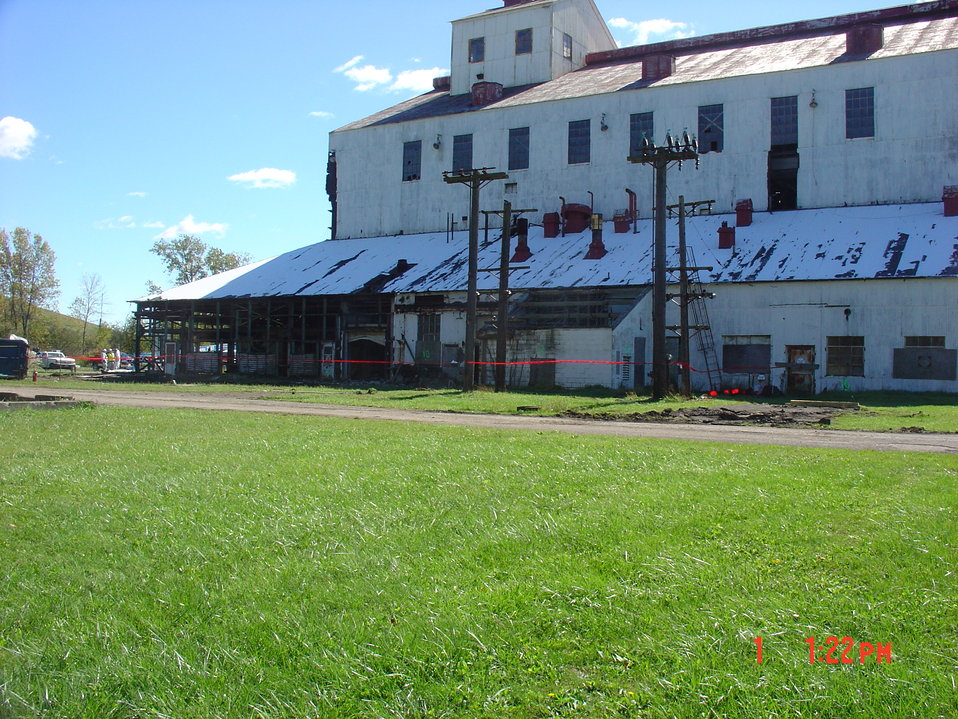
Building 401 siding removed.
Activities from the Niagara Falls Storage Site, which is associated with the former Lake Ontario Ordnance Works. Formerly Utilized Sites Remedial Action Program (FUSRAP), a program initiated in 1974 to identify, investigate and clean up or control sites that were part of the Nation's early atomic energy and weapons program. Activities at the sites that are eligible for FUSRAP were conducted by Manhattan Engineer District (MED) or the Atomic Energy Commission (AEC), both predecessors of the Department of Energy (DOE). The U.S. Army Corps of Engineers was assigned management of FUSRAP by Congress in 1997.